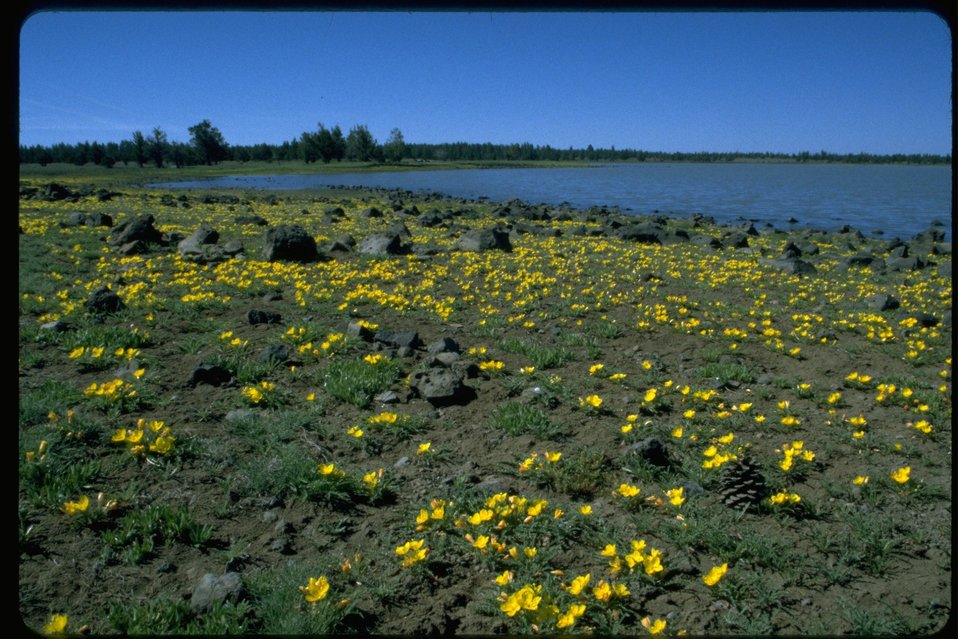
Long shot of Round Valley Reservoir.